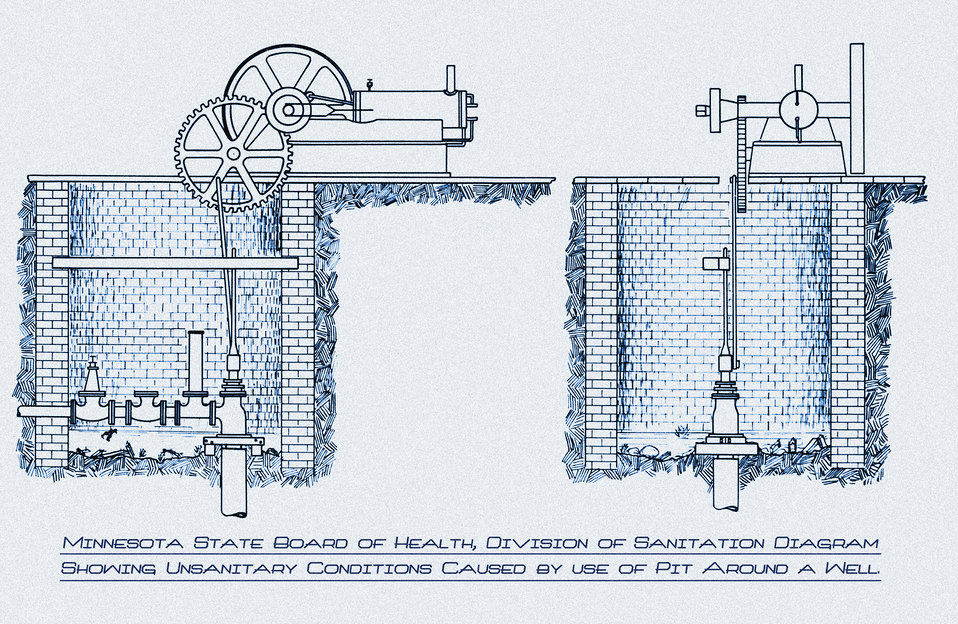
This historic diagram, which had been digitally enhanced and colorized, depicted an improperly constructed municipal 'drilled' well. The chief objection to the design was the inclusion of what was potentially an unsanitary well pit configuration.